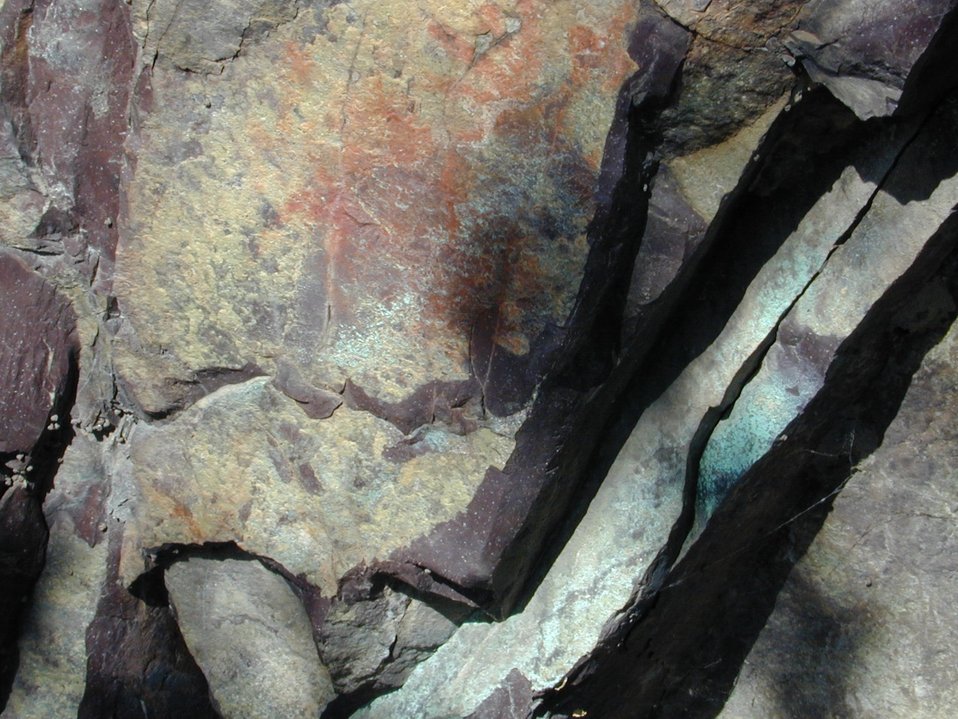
Cultural resources Petroglyphs on Lower Salmon River Cottonwood Field Office UCSC Upper Columbia Salmon Clearwater District